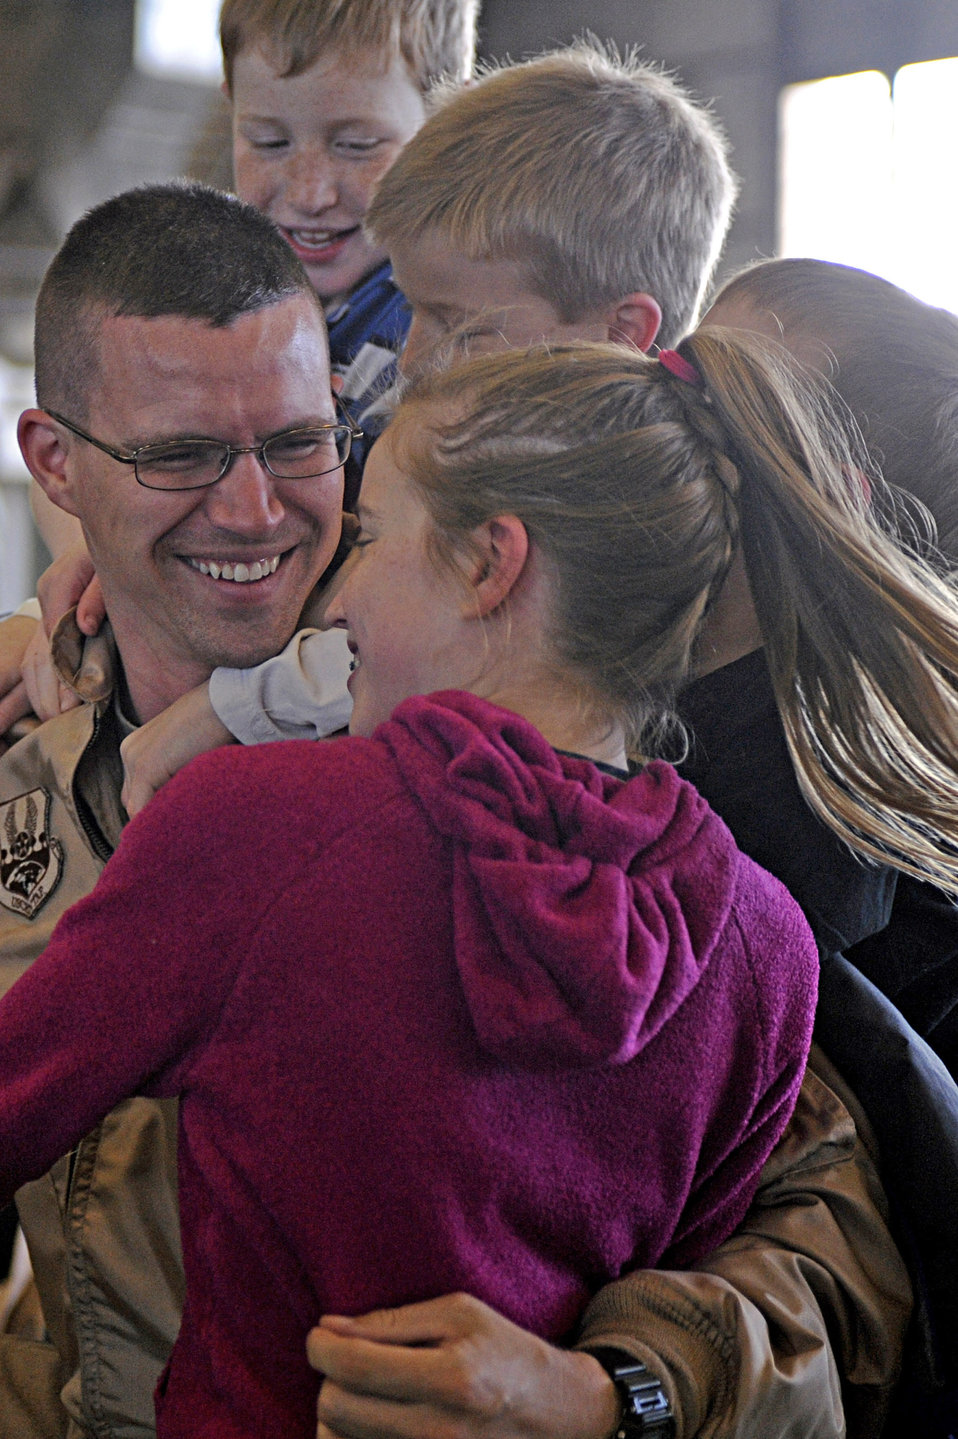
Ellsworth Airmen return home

Capt. Louis Heidema is swarmed by his children after returning home from his deployment Jan. 27, 2010, at Ellsworth Air Force Base, S.D. While deployed, Captain Heidema provided support to operations Iraqi Freedom and Enduring Freedom. Captain Heidema is a 37th Bomb Squadron weapons systems officer.